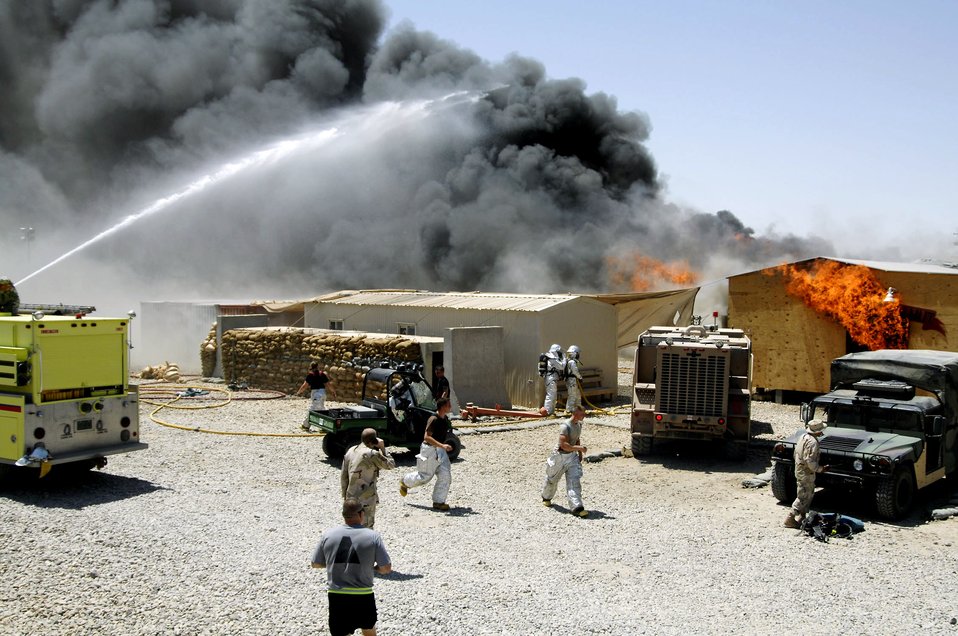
Fire fight in Iraq for the Army

Firefighters attempt to control a fire in the Army Motor Pool June 19 on Camp Adder, Iraq. Due to munitions contained in the building and no potential for loss of life, the firefighters switched to defensive operations for the blaze using six trucks to keep it under control and confined to the building. The firefighters are from the 407th Expeditionary Civil Engineer Squadron at Ali Air Base, Iraq.